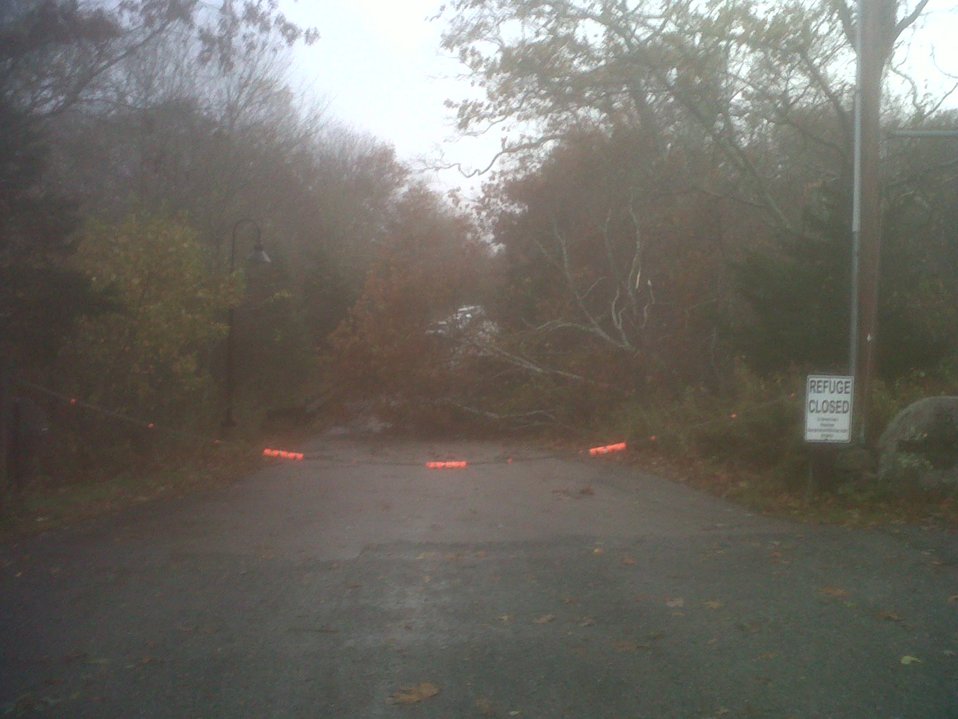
Downed tree at Rhode Island

A downed tree at the entrance road of the Rhode Island National Wildlife Refuge Complex in Charlestown.